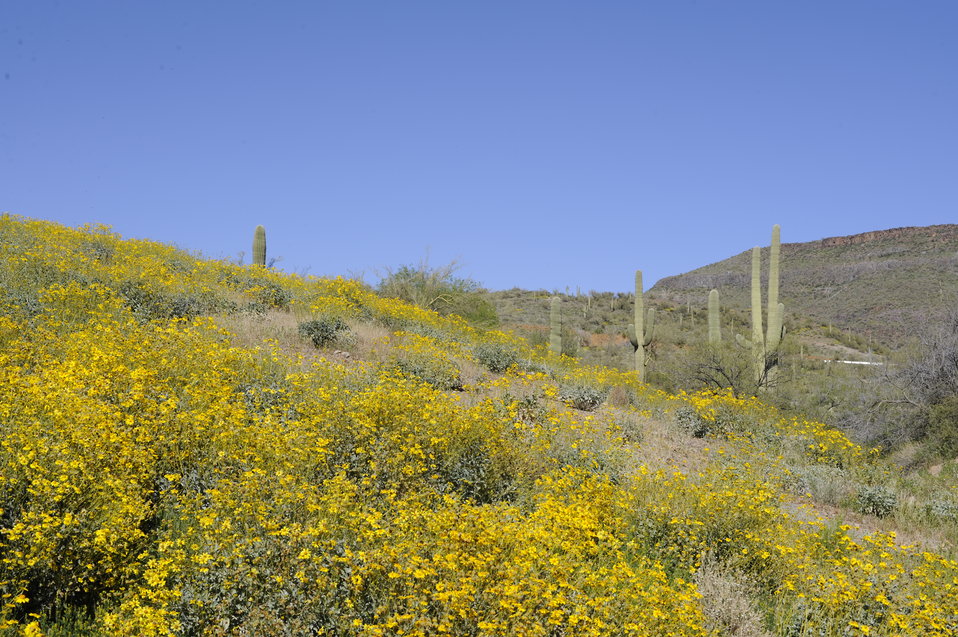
Brittlebush and saguaro cacti cover this hillside in the Sonoran Desert on the Cabeza PrietaNational Wildllife Refuge.